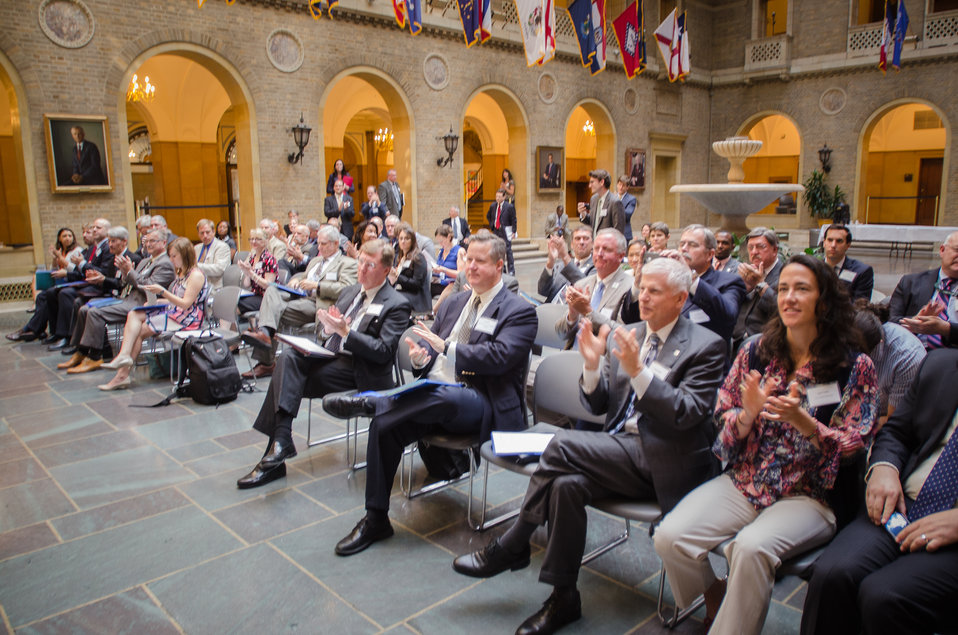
U.S. Department of Agriculture (USDA) Forest Service (FS) Chief Tom Tidwell (second from right) and others applaud the signing of the USDA Bioenergy Memorandum of Understanding. Deputy Agriculture Secretary Krysta Harden joined leaders from, Biomass Power Association, President and CEO Bob Cleaves; Pellet Fuels Institute Executive, Director Jennifer Hedrick; Biomass Thermal Energy Council, Executive Director Joseph Seymour; and Alliance for Green Heat, President John Ackerly, for the announcement of the new partnership agreement, at the USDA Headquarters, in Washington, D.C., on Wednesday, September 11, 2013.
The partnership agreement focuses on promoting wood energy nationwide as a means to address fire risks, bolster rural economic development, improve air quality, and help meet the Obama Administration’s renewable energy and energy efficiency goals. These organizations support the use of wood energy across the scale of users – from residential users, to commercial and intuitional facilities, to industrial production of heat and or electricity to drive businesses and feed the electrical grid.
Under the terms of the five grants announced by Deputy Secretary Harden, private, state and federal organizations will work together to stimulate the development of additional wood energy projects in their states. Collectively, $2.9 million will be spent o this effort -- $1.1 million on federal funds and $1.8 million in non federal funds. For more information o0n the cooperative agreement program, visit na.fs.fed.us.werc/wood-energy/ USDA Photo by Lance Cheung.